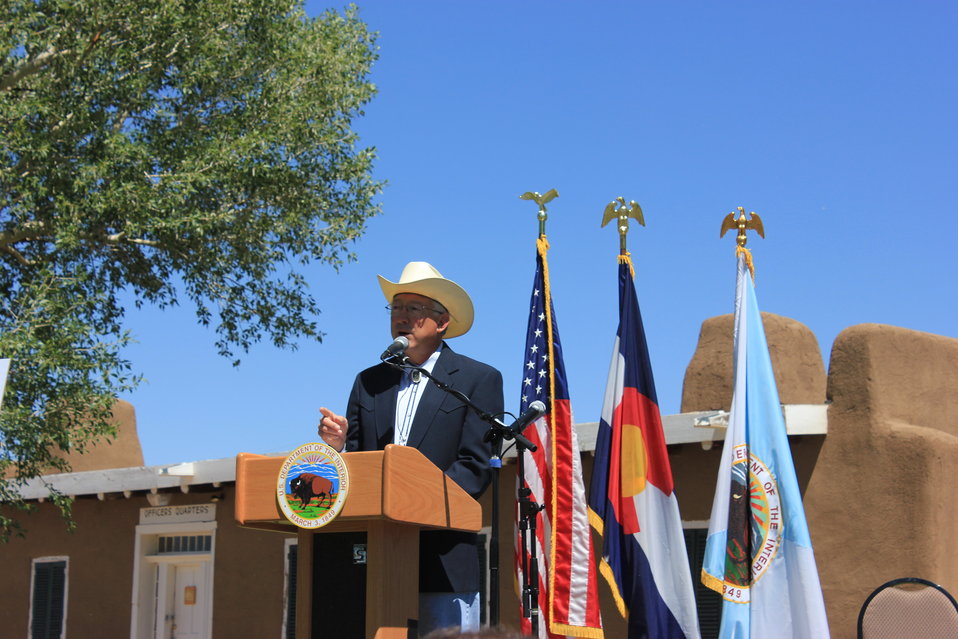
Historic Conservation Easement in Sangre de Cristo Mountains